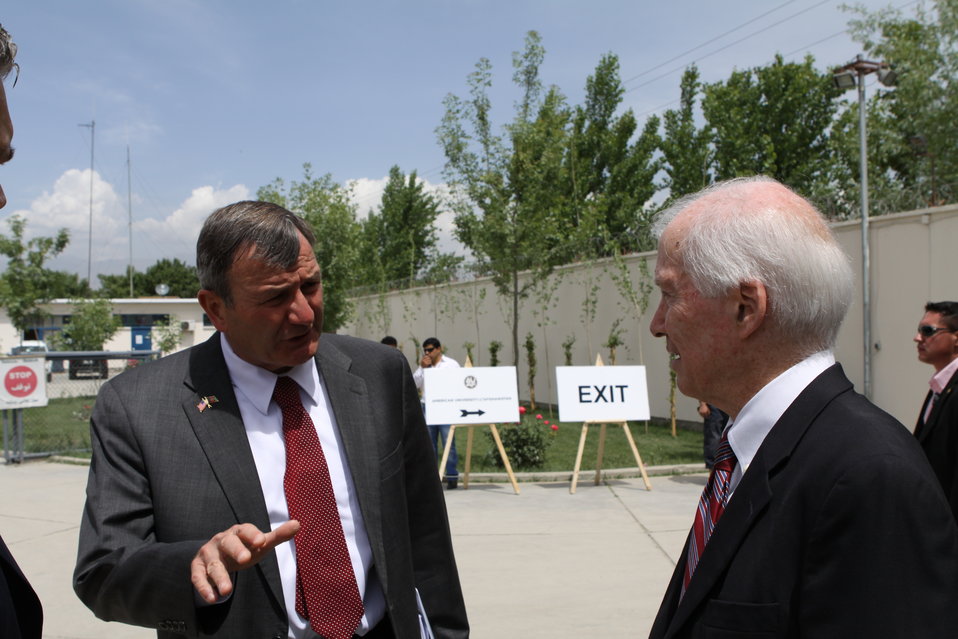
100526 AUAF Graduation 019